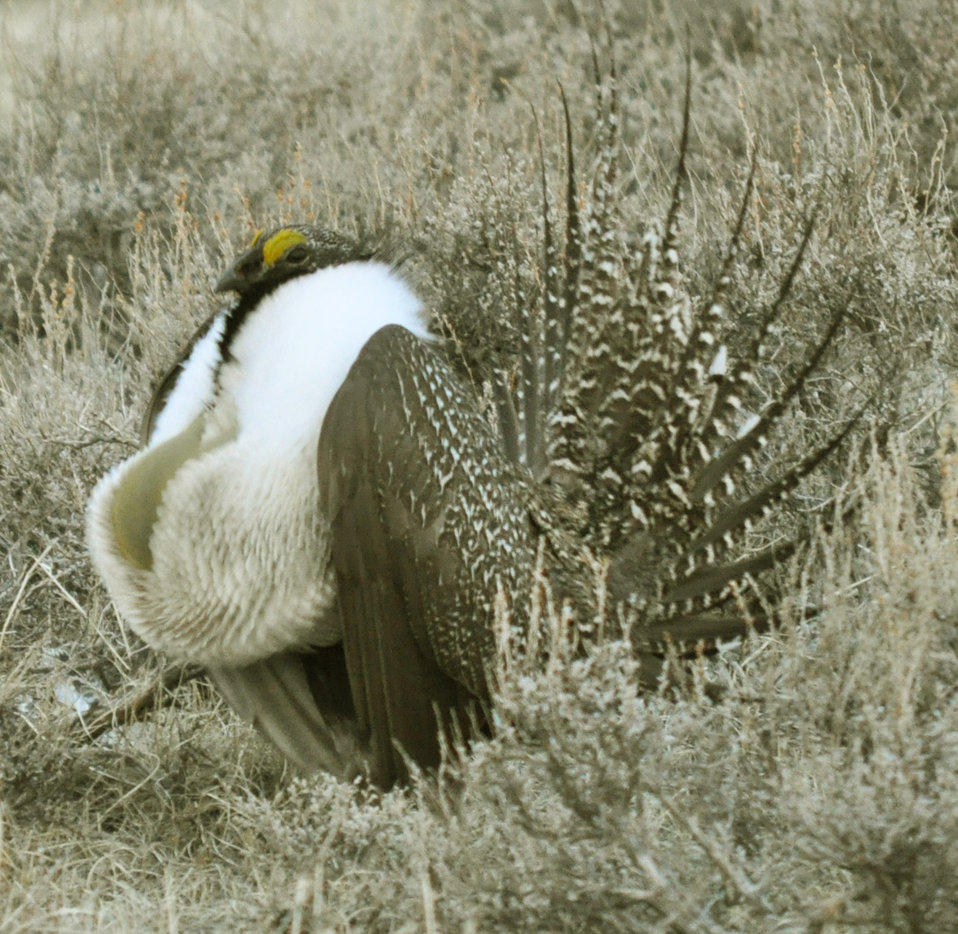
Male greater sage-grouse struts to attract females at a lek (breeding or dancing ground) near Bodie, California in April.